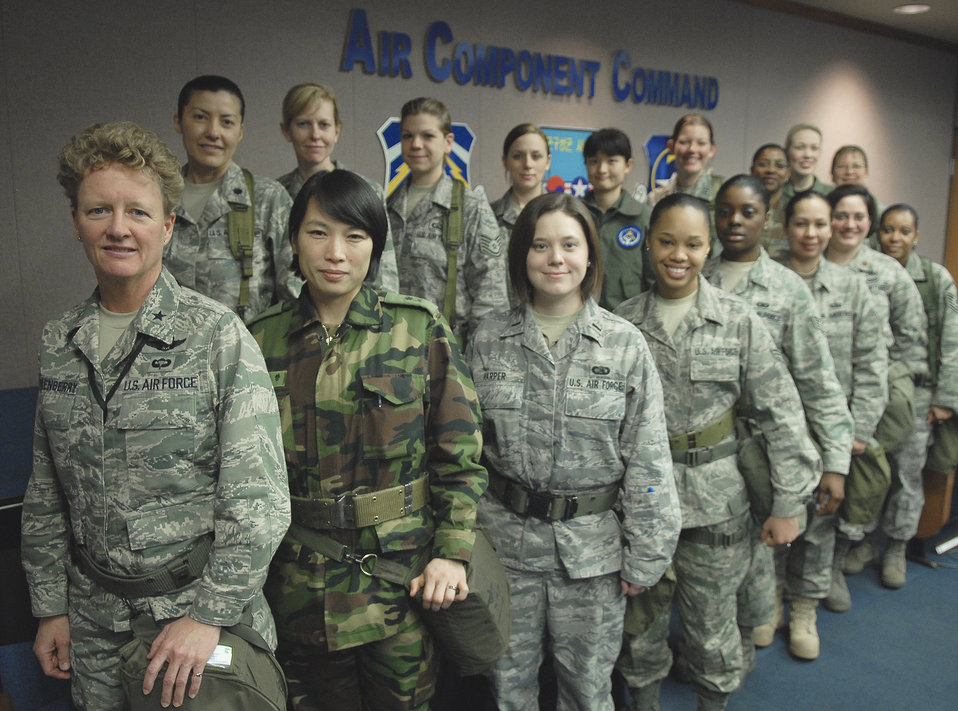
Female Airmen celebrate Women's History Month at Osan

Female Airmen representing the United States and South Korean air forces gather together to show their unity for Women's History Month during the Key Resolve/Foal Eagle 09 exercise March 17 at Osan Air Base, South Korea. The women represent a variety of ranks and job specialties within the Air Component Command.